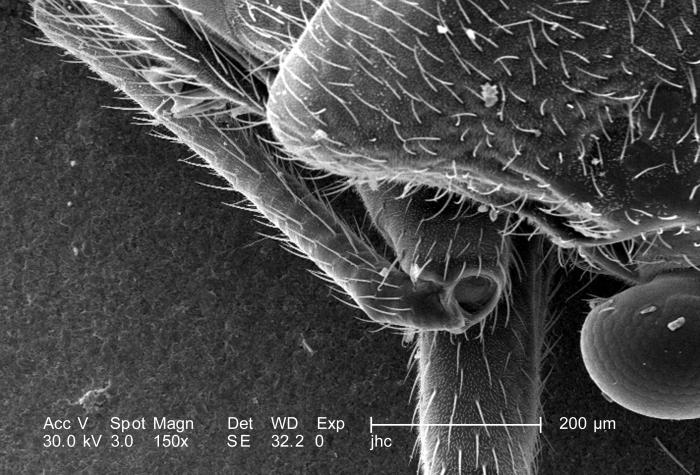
Magnified 302X, which is one half the magnification of PHIL 9914, this scanning electron micrograph (SEM) depicted some of the morphologic details found at one of the leg joints of what was an unidentified 1/4"-sized black flying insect with a small red mark on its dorsum, found in the suburbs of Decatur, Georgia. As a member of the Phylum Arthropoda, i.e., Arthro = 'jointed', and poda 'leg', sporting six pairs of legs, this organism was a member of the Class Insecta. Note that PHIL 9912, 9913 and 9914 depict this region under varying magnifications.